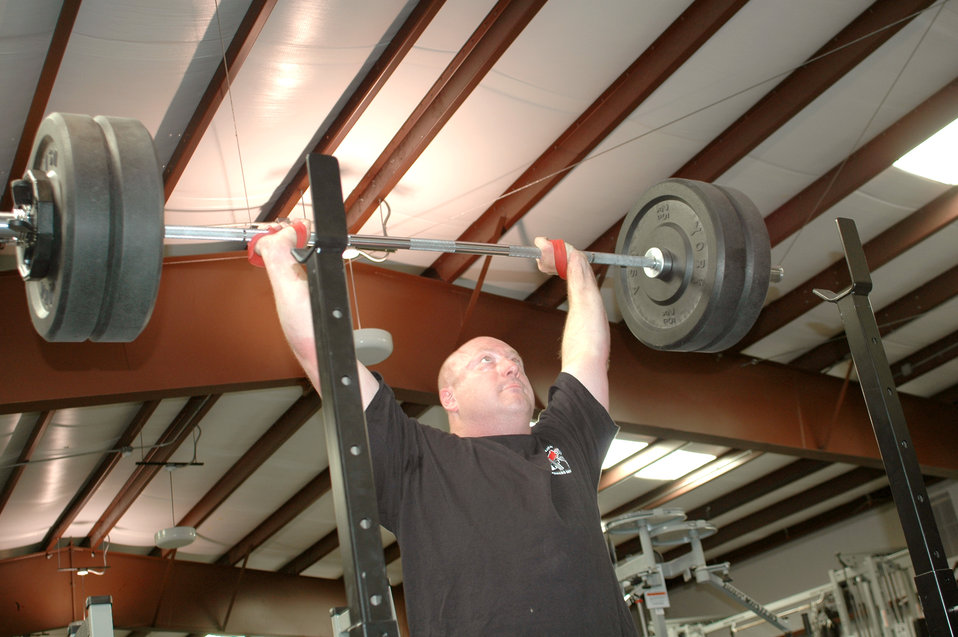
Major works hard at the business of preparing warriors

KIRTLAND AIR FORCE BASE, N.M. -- Maj. Michael Ternus lifts nearly 500 pounds during a recent workout at the pararescue school's gym here. Performing